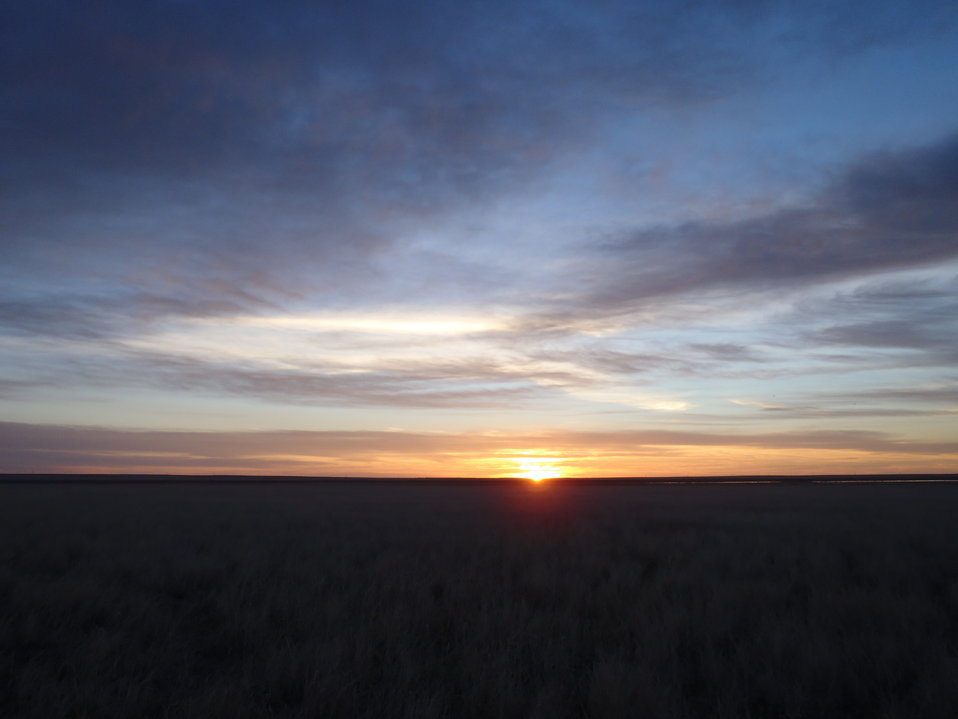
Sunrise On the Refuge

We get some amazing sunrises at the Refuge. You can see why Montana is nicknamed 'Big Sky Country!'